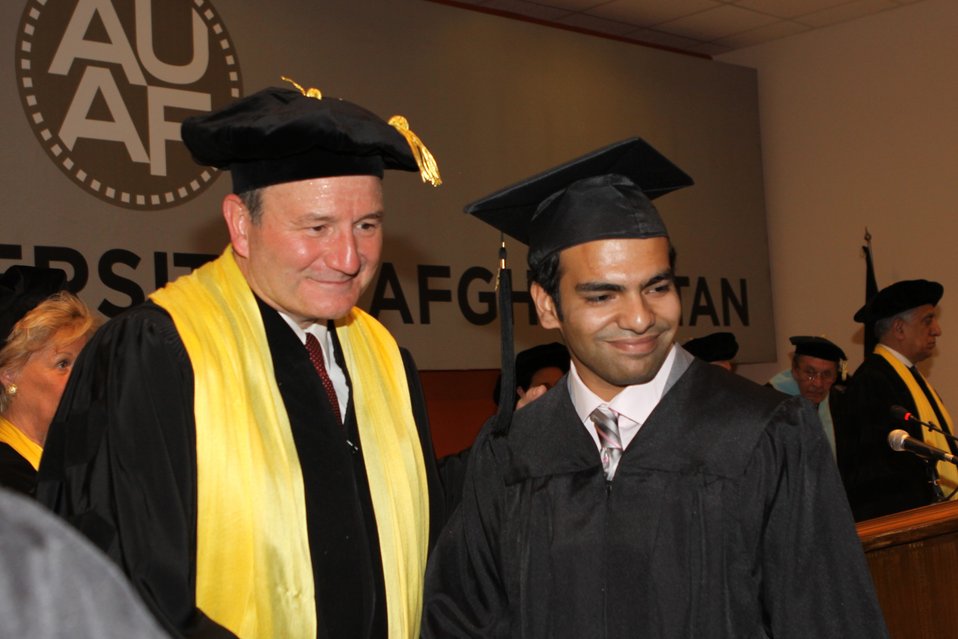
100526 AUAF Graduation 300